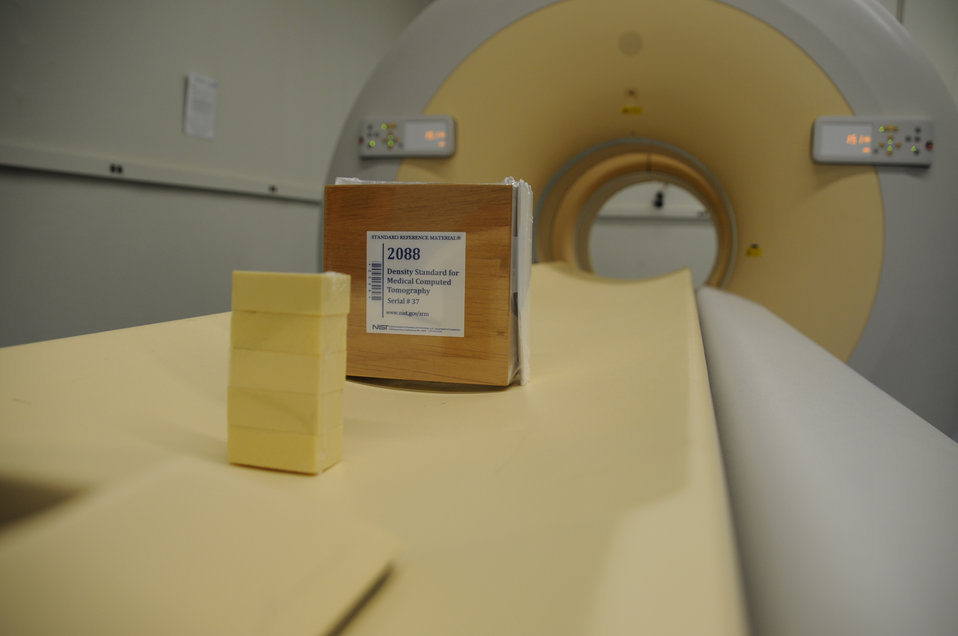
Standard Reference Material 2088 makes it possible to link CAT scans to the International System of Units for the first time. The SRM - a collection of five blocks of polyurethane foam of different densities, shown here in front of its delivery case - allows scans to be tied to measurement units important for diagnosing lung disease.